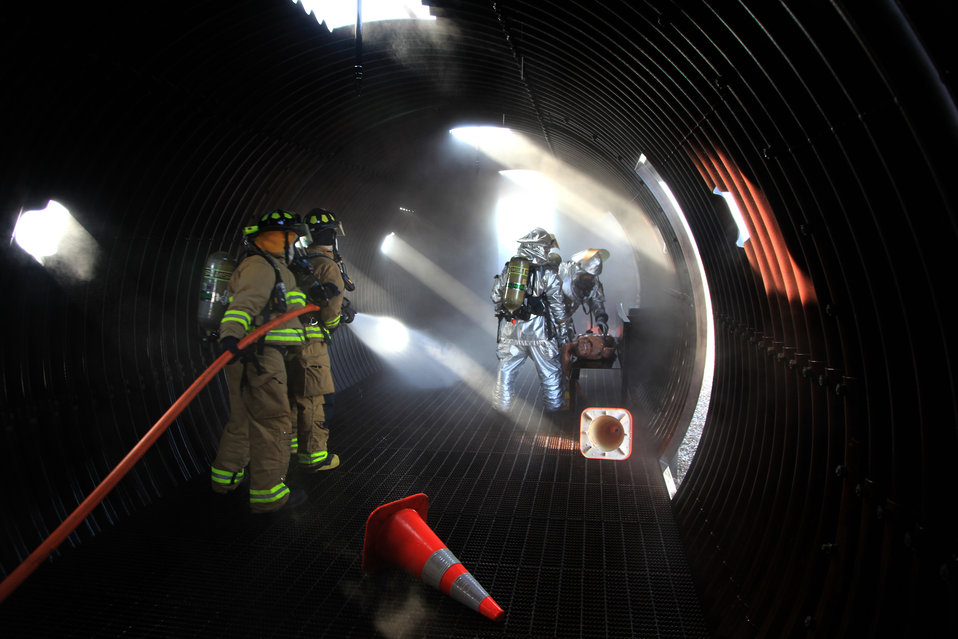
Where there's smoke...

Firemen from the 377th Air Base Wing